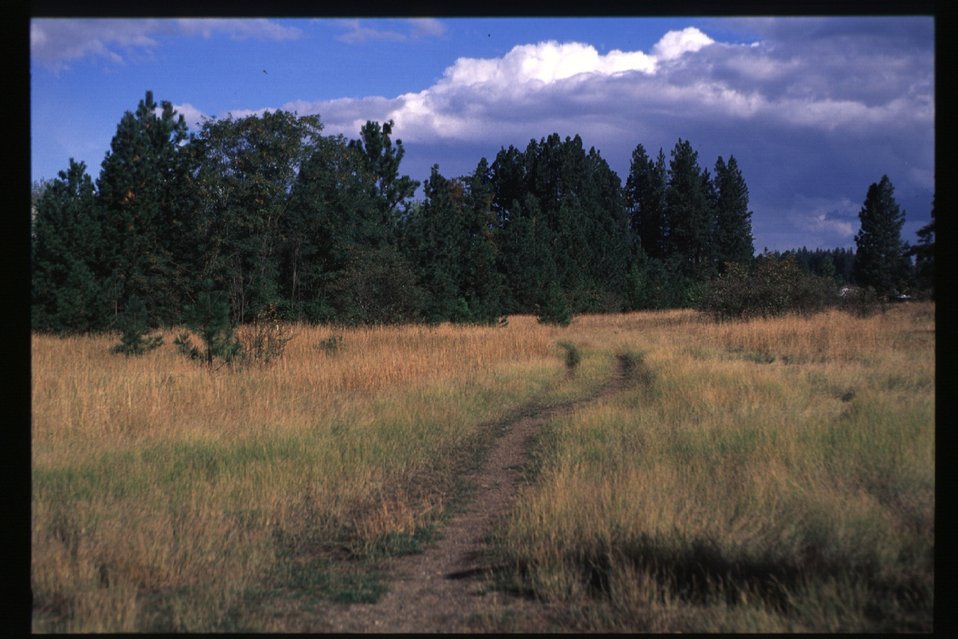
Scenic Blackwell Island Couer d'Alene Field Office UCSC Upper Columbia Salmon Clearwater District